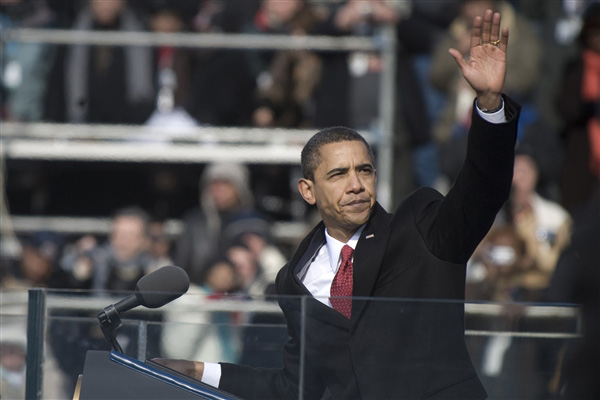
Obama vows not to waver in America's defense

President Barack Obama waves to the crowd at the conclusion of his inaugural address Jan. 20 in Washington, D.C. The 44th president of the United States assumed his duties as commander in chief and vowed not to waver in defending America.